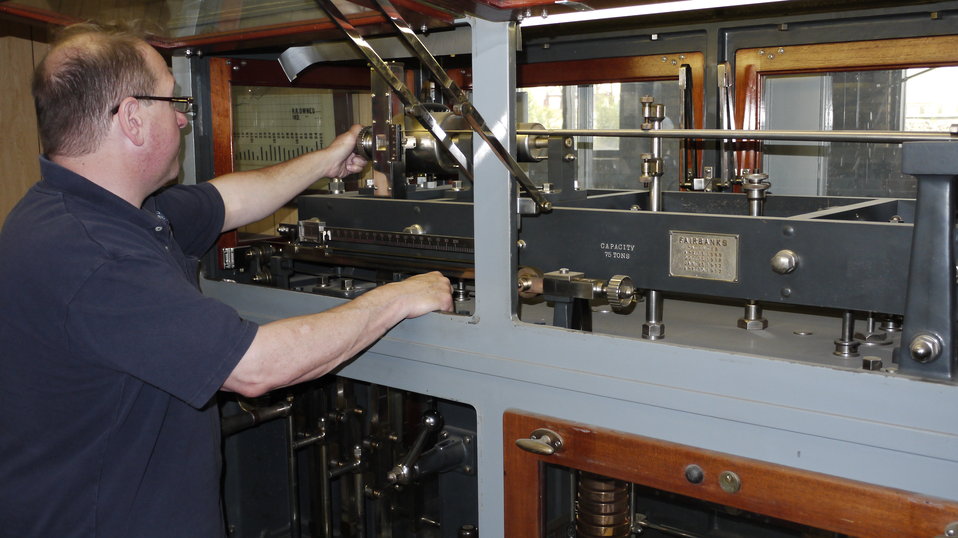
U.S. Department of Agriculture’s (USDA) Grain Inspection, Packers, and Stockyard Administration (GIPSA) industrial specialist Marcus Harwitz uses the mechanical weigh beam of the Master Scale to obtain the weight of the railroad test car at the USDA GIPSA Master Scale Depot in Chicago, IL on Jul 2, 2013. USDA GIPSA entered into an agreement with the National Institute of Standards and Technology (NIST) and the Association of American Railroads (AAR) in 1980 transferring responsibility to USDA’s GIPSA to maintain the Master Scale facility in Chicago, IL and calibrate all the master scales in the continental U.S. annually.